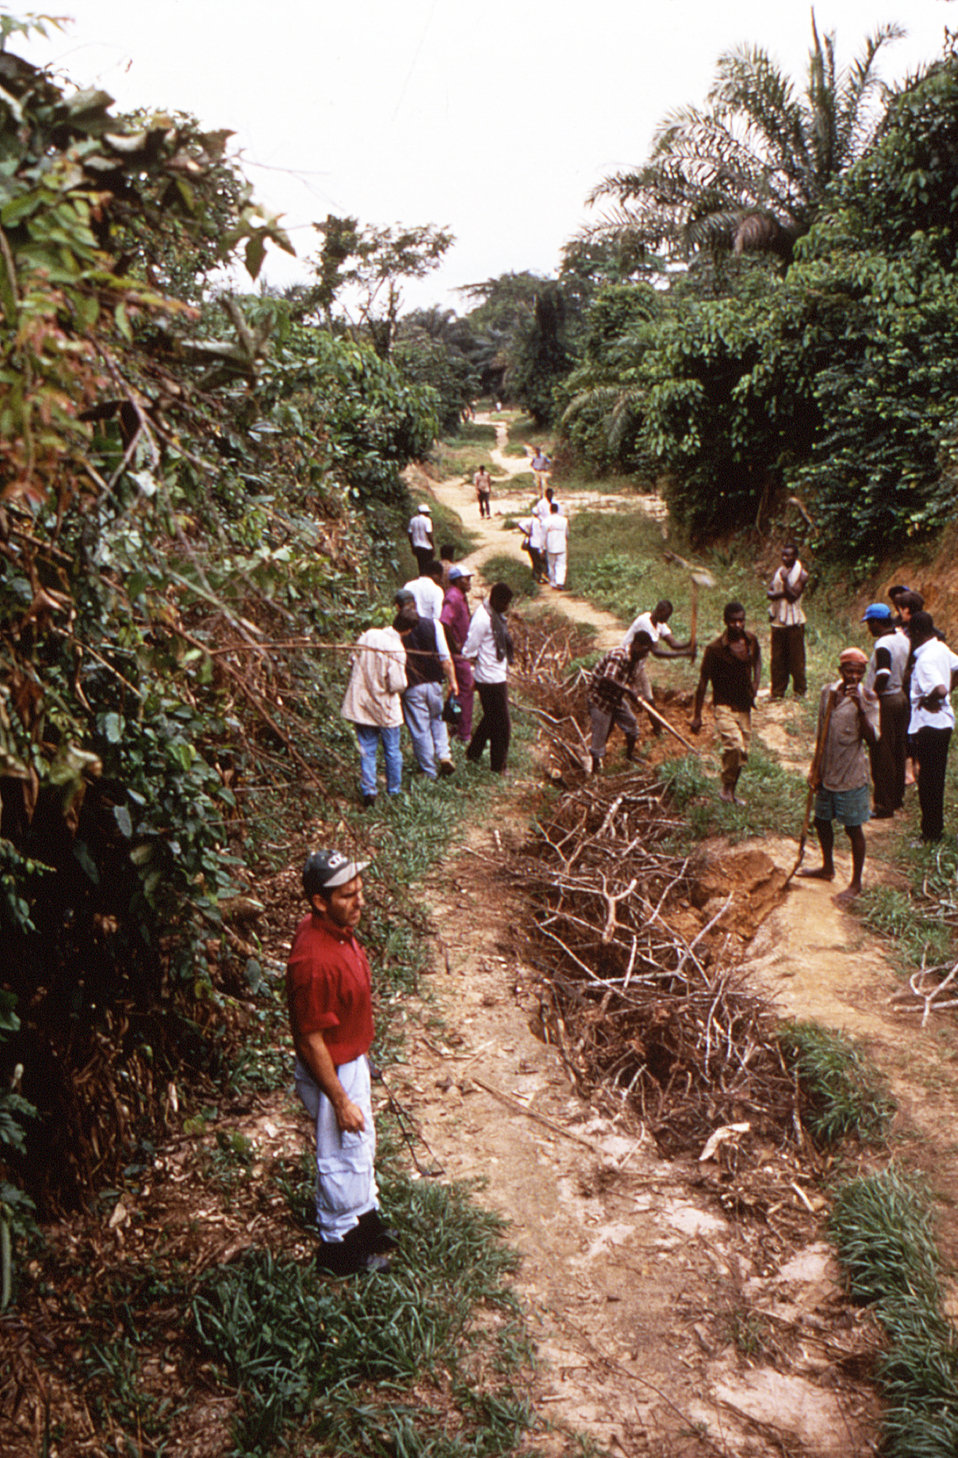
This image was created during a investigation into an outbreak of monkeypox, which took place in the Democratic Republic of the Congo (DRC), 1996 to 1997, formerly Zaire. Depicted here, was the view on the road taken from Katako-Kombe to the town of Ekanga.